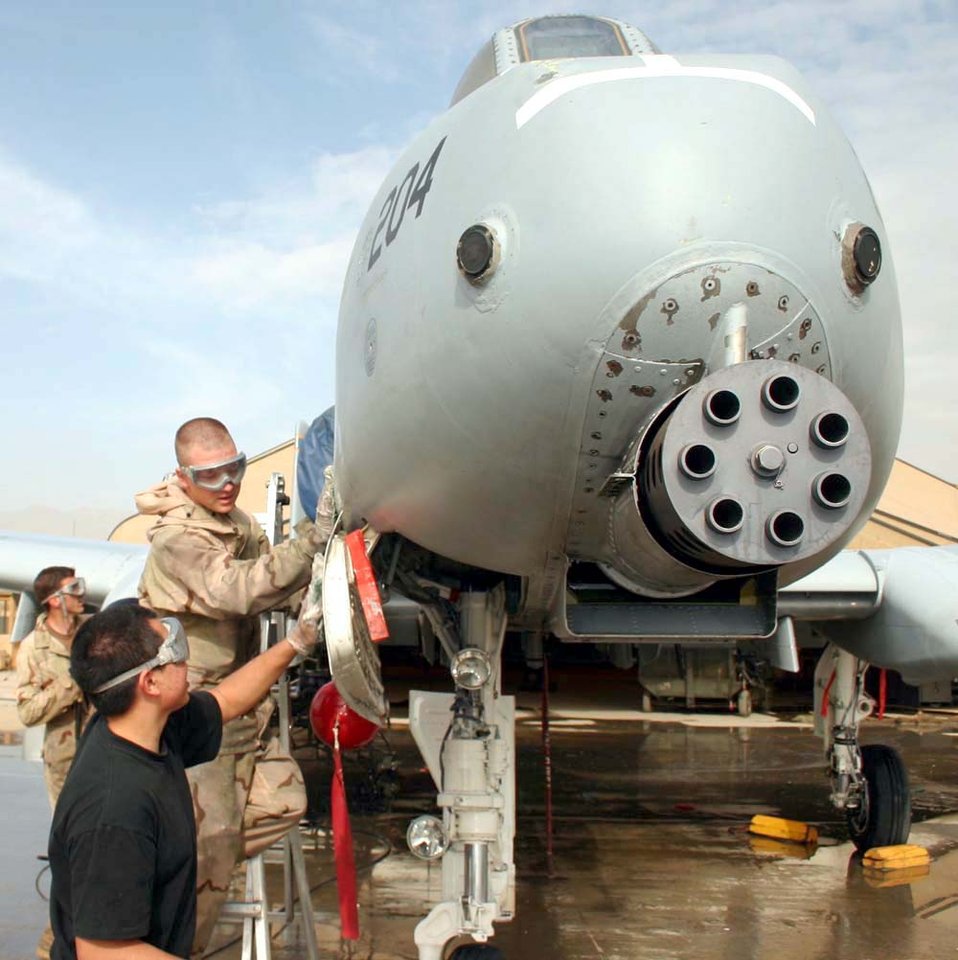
Enduring Freedom

BAGRAM AIR BASE, Afghanistan -- Airman 1st Class Russell Spurlin, on the ladder, Airman 1st Class Michael Mendez, foreground, and Staff Sgt. Tom Puckett wash an A-10 Thunderbolt II on the flightline here March 22. Airman Spurlin is an aircraft electrician, Airman Mendez in a communication and navigation airman, and Sergeant Puckett is a crew chief, all with the 455th Expeditionary Aircraft Maintenance Squadron. The harsh and dusty environment in Afghanistan gets into every part of the aircraft and a good scrubbing is the only way to keep the A-10 clean.